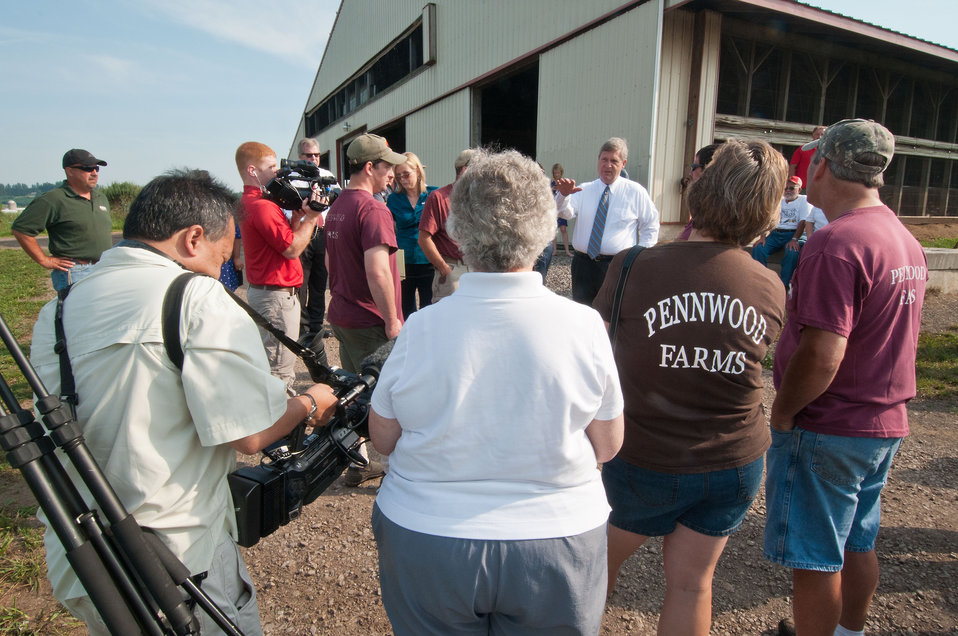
Agriculture Secretary Tom Vilsack highlighted the U.S. Department of Agriculture’s (USDA) energy efficiency programs and announced a new effort to help rural consumers make affordable, energy-efficient improvements to their homes and businesses during a tour of Pennwood Dairy Farms in Berlin, PA on Tuesday July 17, 2012.